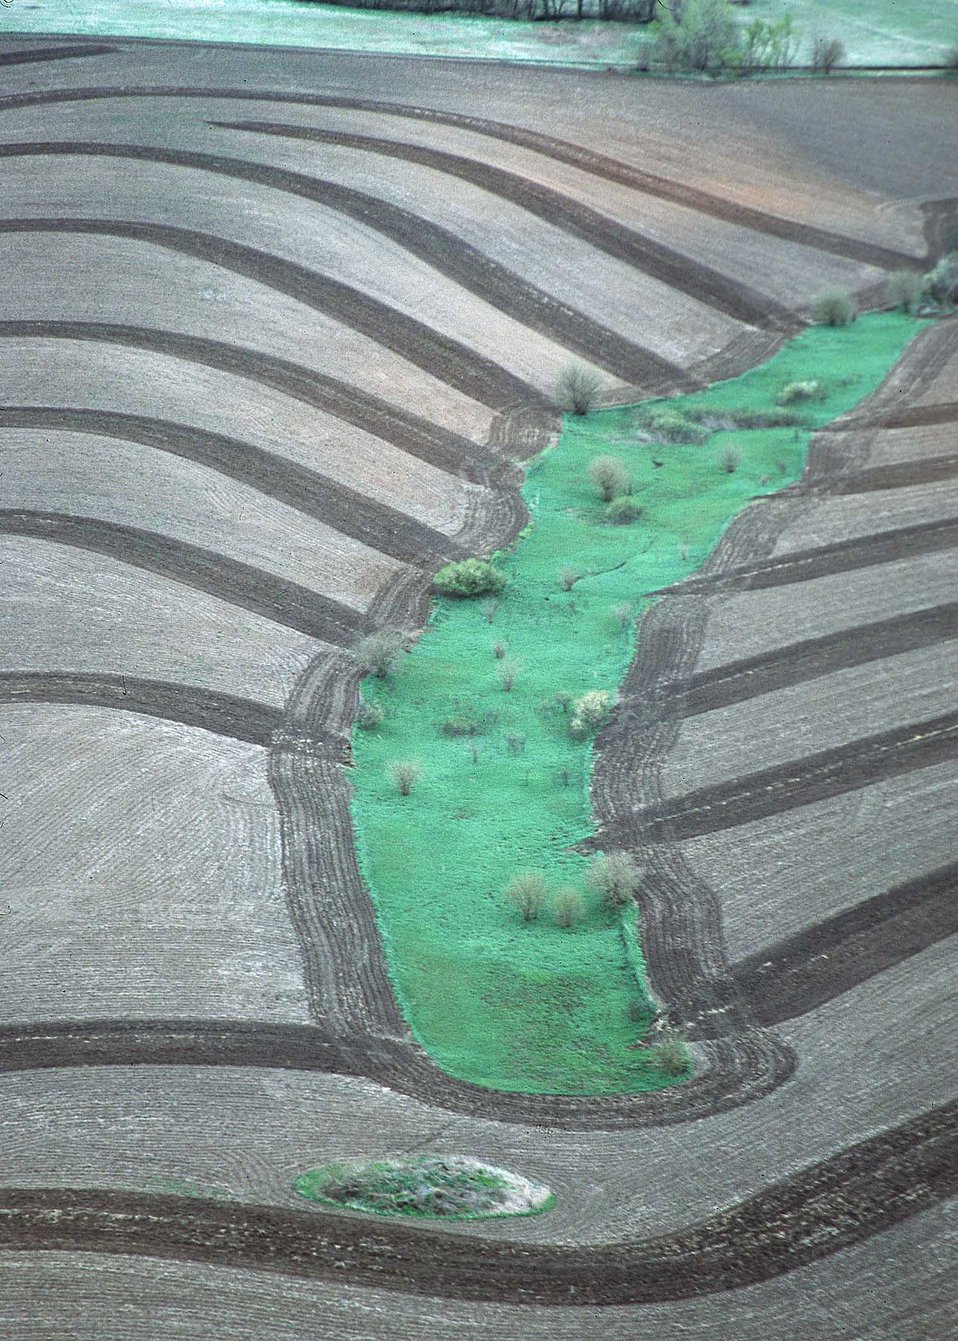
Aerial view on contour terraces and grassed waterways for erosion control. Kansas.